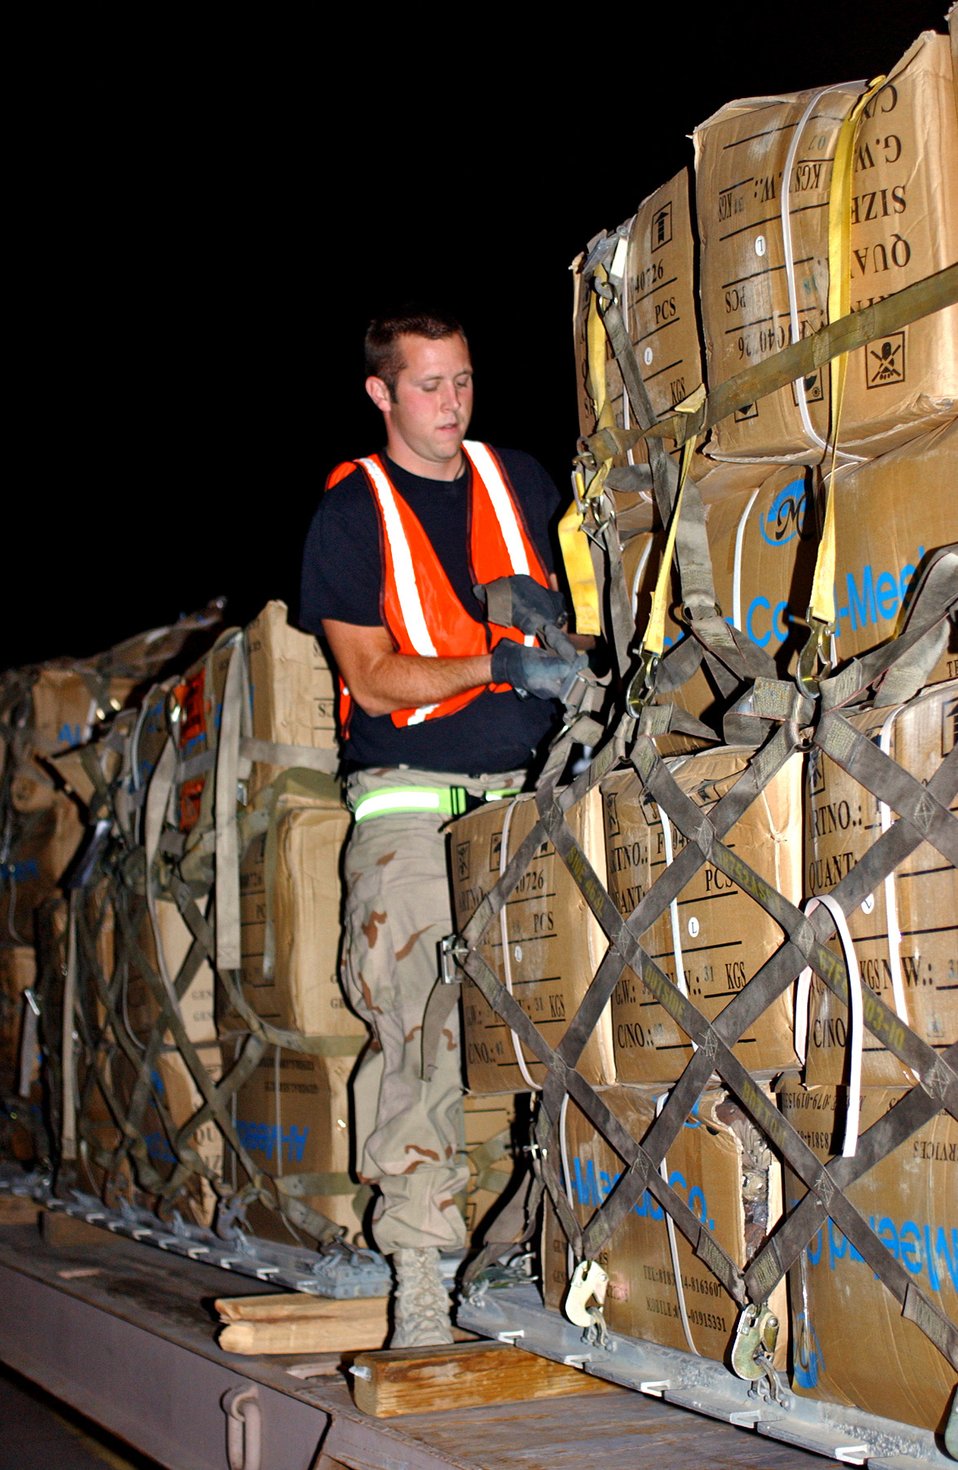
Air terminal operations center keeps wing rotating

SOUTHWEST ASIA -- Senior Airman Ronnie Hearne prepares a pallet to be loaded on an aircraft. He is an air transportation specialist with the 380th Expeditionary Logistics Readiness Squadron.